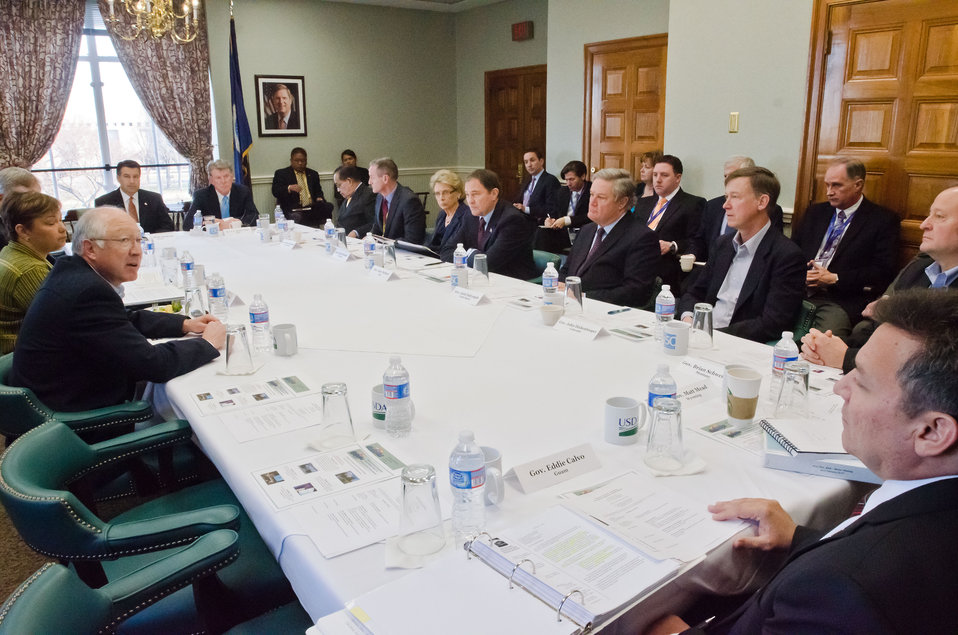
Interior Secretary Ken Salazar talks with Western Governors and Federal Officials, in the Lincoln Room at the United States Department of Agriculture headquarters, on Sunday, February 26, 2012.